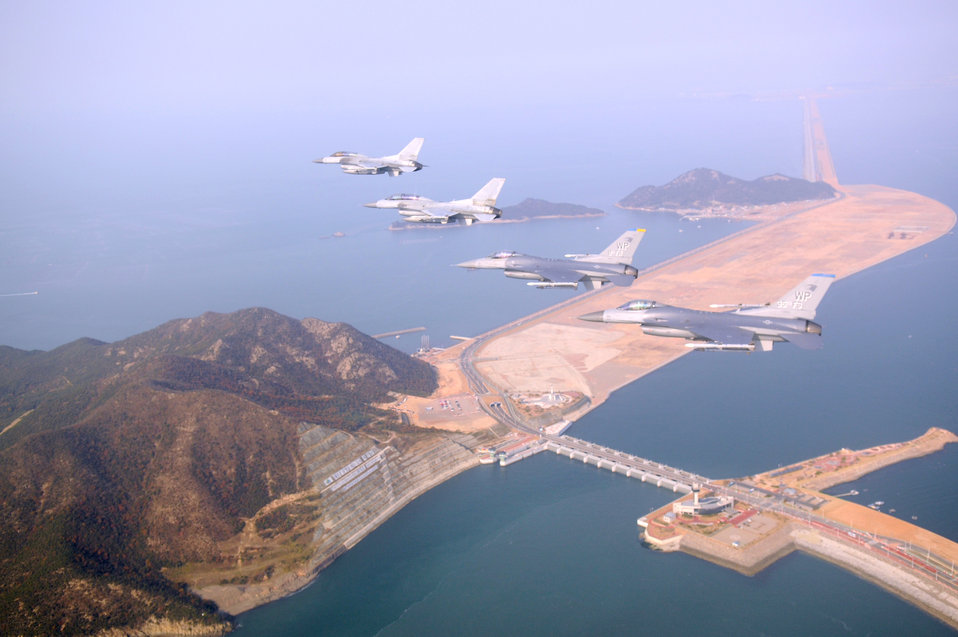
Korean War anniversary

A U.S. and South Korean air force coalition flight of F-16 Fighting Falcons fly over the Saemangeum Seawall in South Korea, Nov. 10, 2010, during a joint celebration of the 60th anniversary of the Korean War.